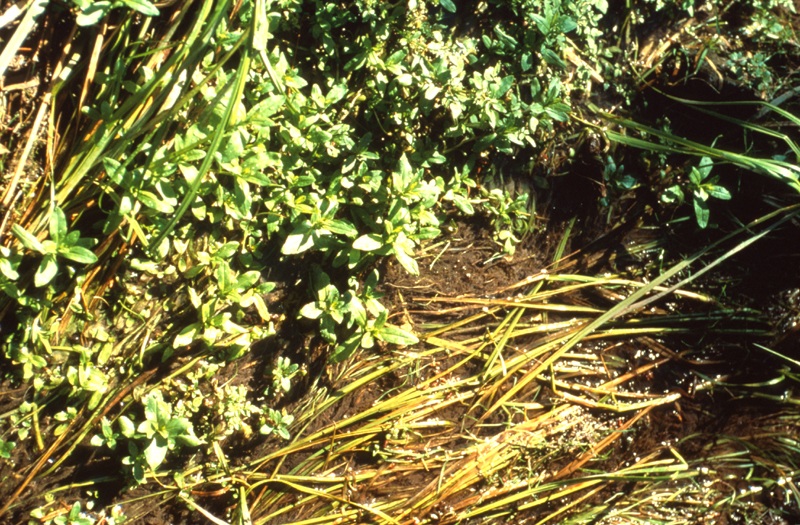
South Fork of the Snake River